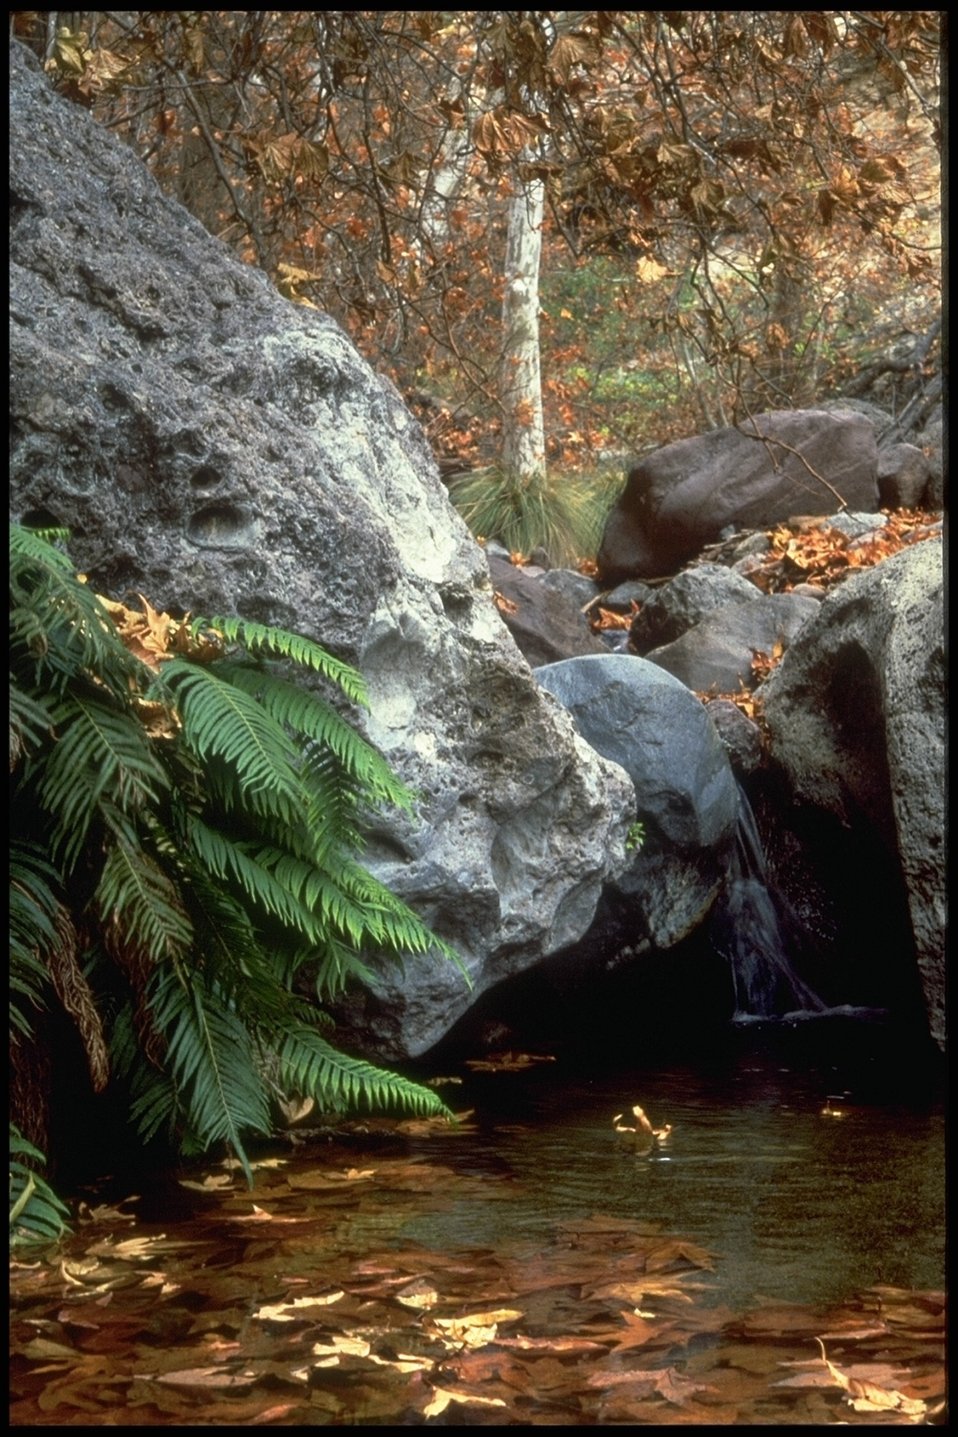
Peoples Canyon is part of the Arratra Mountain Wilderness area. The 129,800-acre Arrastra Mountain Wilderness is located in Mohave, Yavapai, and LaPaz counties, 100 miles northwest of Phoenix and 70 miles southeast of Kingman, Arizona.